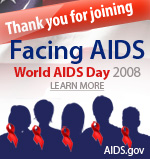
thank you for facingaids group2